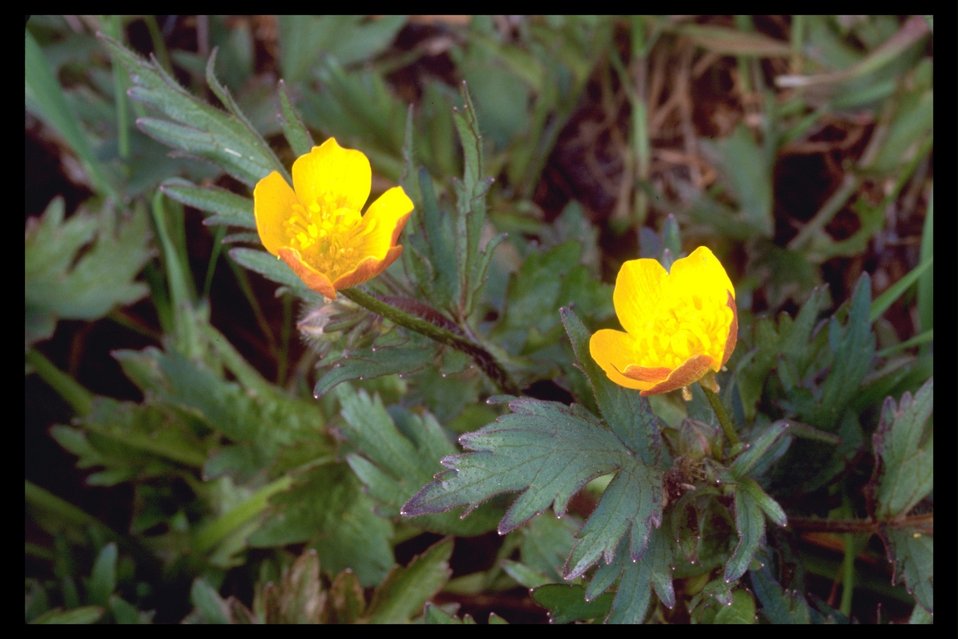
Southern Oregon Buttercup (Ranunculus austro-oreganus).